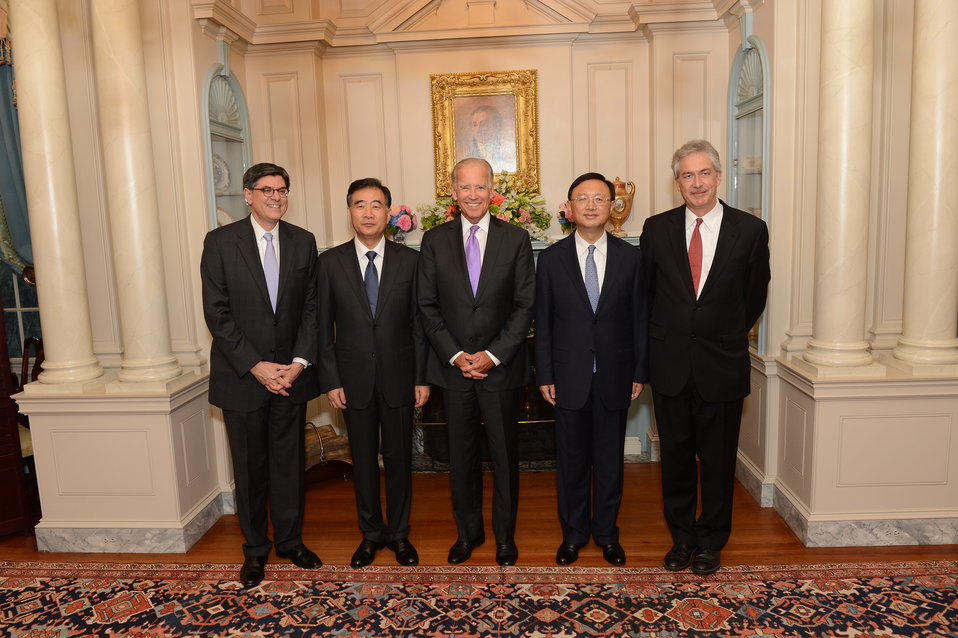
Vice President Biden, Deputy Secretary Burns, Secretary Lew, Chinese State Councilor Yang, and Chinese Vice Premier Wang Pose for a Photo

Vice President Joesph Biden, Deputy Secretary of State William Burns, U.S. Secretary of the Treasury Jacob Lew, Chinese State Councilor Yang, and Chinese Vice Premier Wang pose for a photo before participating in a joint dinner during the U.S.-China Strategic and Economic Dialogue at the U.S. Department of State in Washington, D.C., on July 10, 2013.